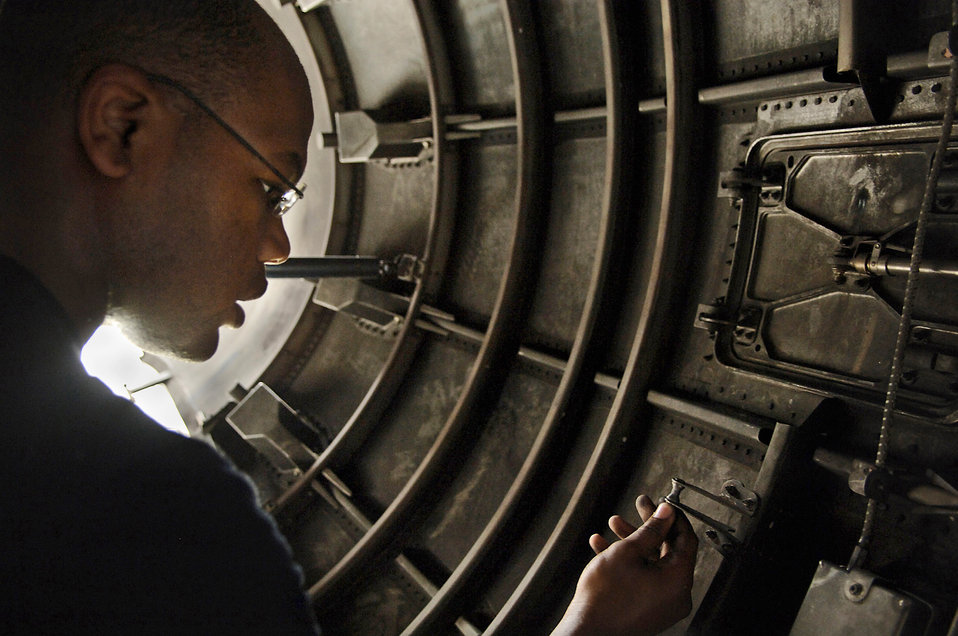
Charleston Airmen get Lean with maintenance

Airmen 1st Class Reginold Camp conducts part of a home station check inspection by going over a C-17 Globemaster III engine checklist Aug. 9 at Charleston Air Force Base, S.C. Airman Camp is a jet engine technician assigned to the 437th Maintenance Squadron.